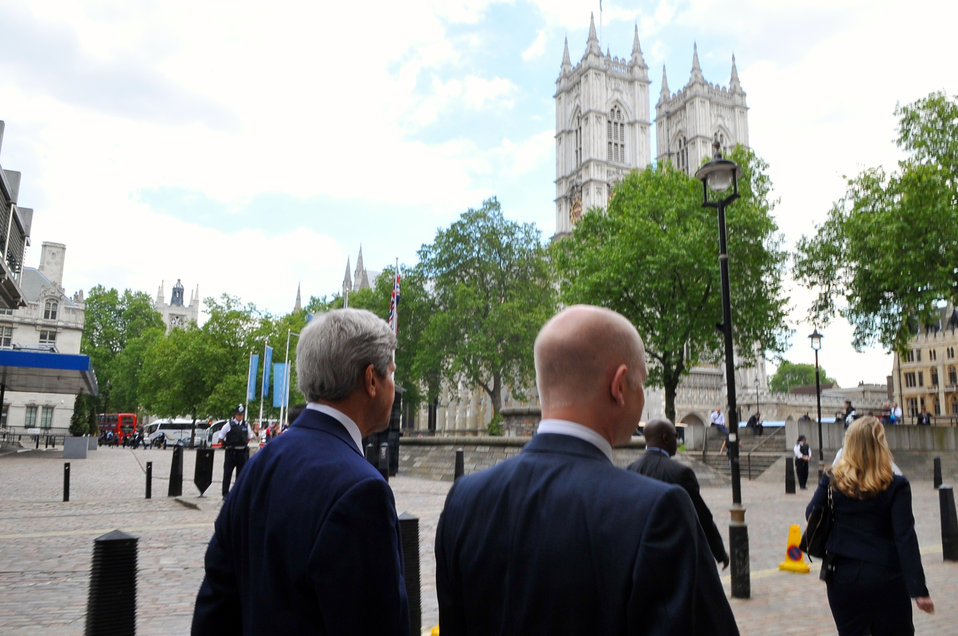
Secretaries Kerry, Hague Pass Westminster Abbey During Walk in London

U.S. Secretary of State John Kerry and British Foreign Secretary William Hague pass Westminster Abbey as they conclude a walk through central London after a series of ministerial meetings on May 15, 2014.